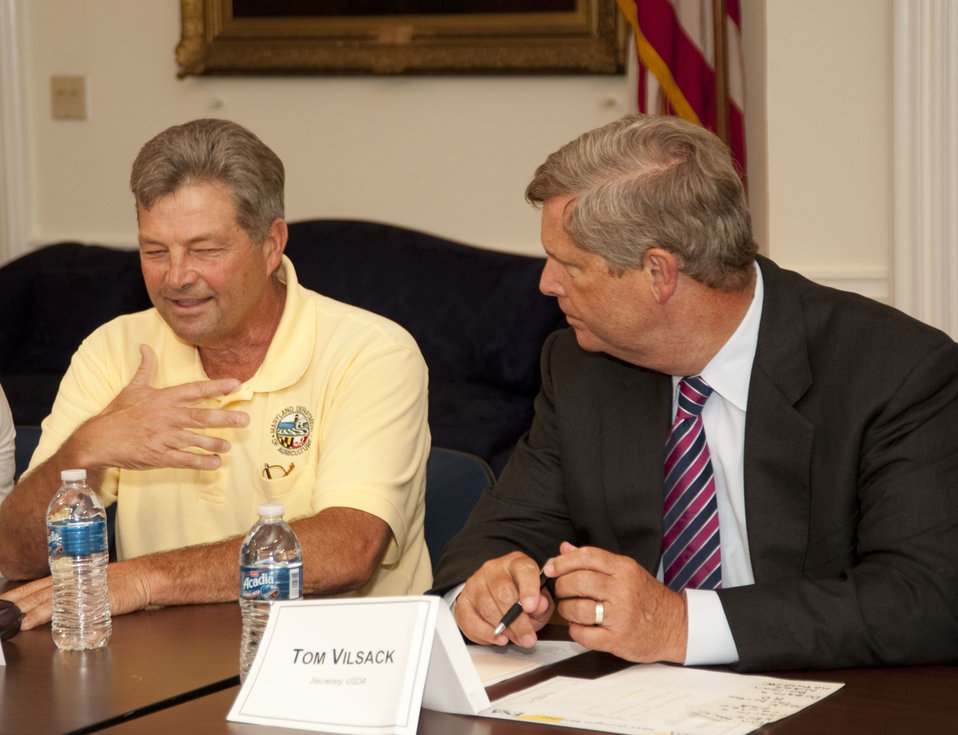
Agriculture Secretary Tom Vilsack meeting with Maryland Agricultural Leaders for a round table discussion in Annapolis, MD, on Thursday, July 21, 2011.